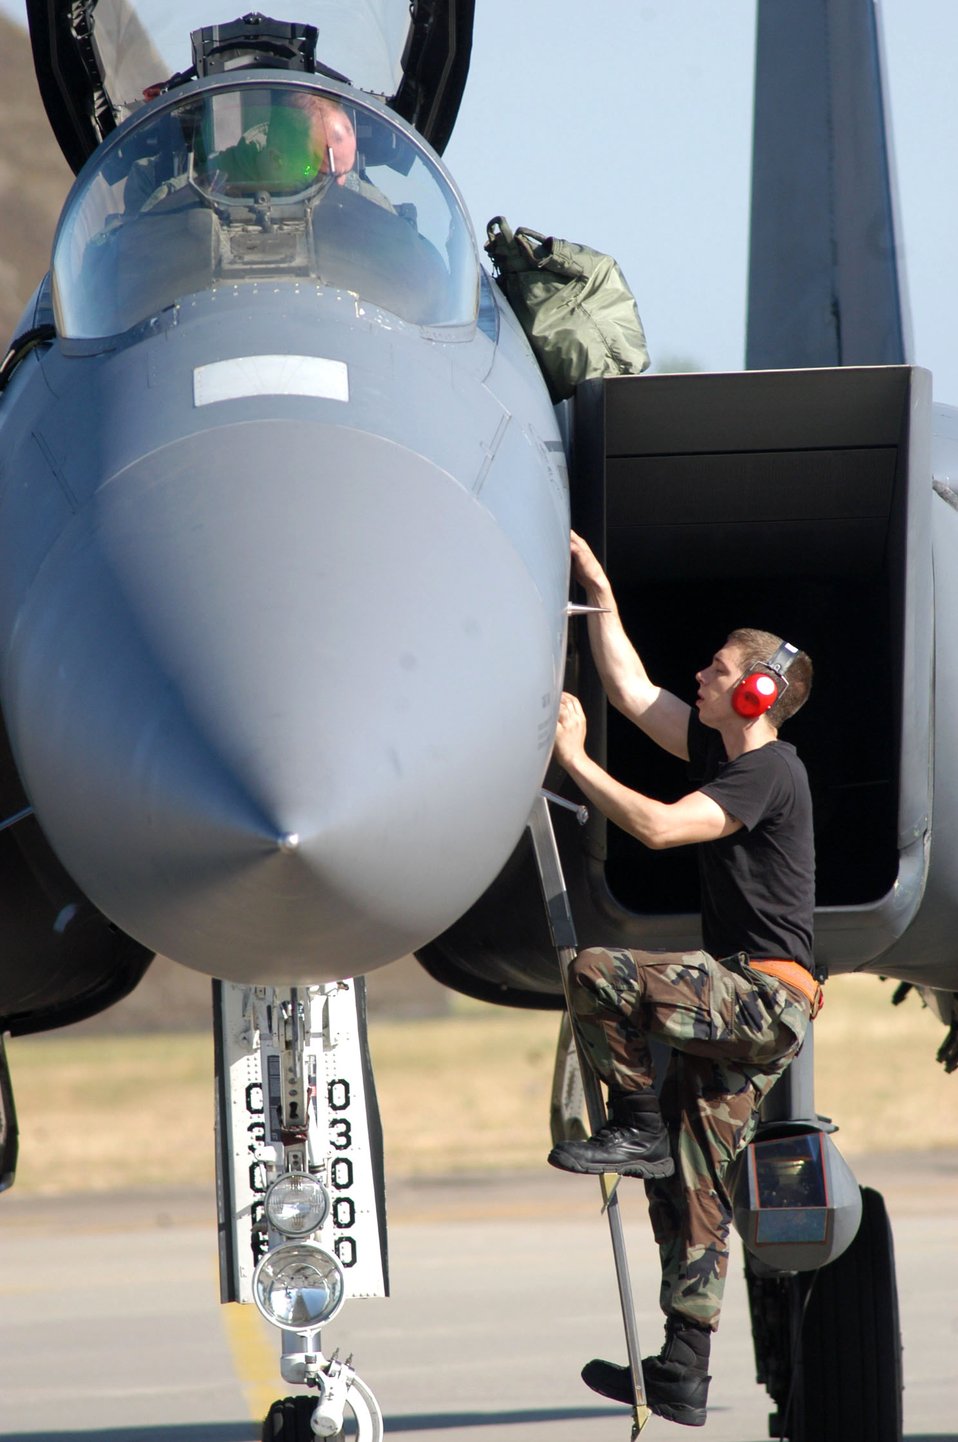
Lakenheath tests small-diameter bombs

Airman 1st Class Nathan Schott climbs from an F-15E Strike Eagle before the first launch of the modified aircraft on an operational training mission carrying the newest small-diameter bomb, the guided bomb unit-39. Airman Schott is an assistant dedicated crew chief with the 494th Aircraft Maintenance Unit at Royal Air Force Lakenheath, England.